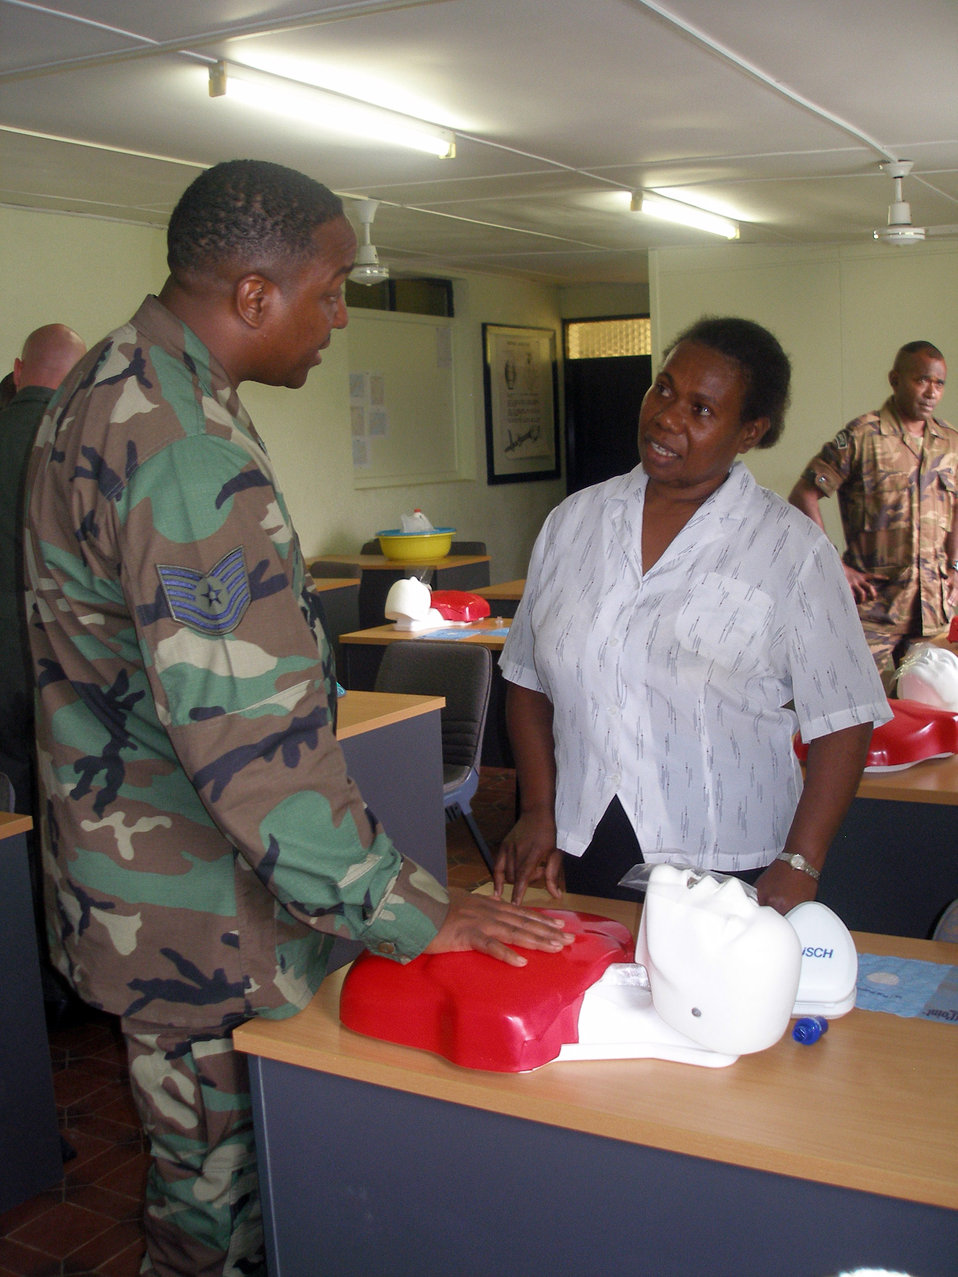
Humanitarian mission impacts team, residents

Tech. Sgt. William Parker gives basic life support instruction during a two-day train-the-trainer class July 25 on Vanuatu. Sergeant Parker is the NCO in charge of Clinical Medicine Flight, 15th Medical Group from Hickam Air Force Base, Hawaii. He was part of a team that taught basic life support and self-aid buddy care train-the-trainer courses to police, immigration and customs personnel, and paramedics on the island of Vanuatu. The team was part of the Oceania Humanitarian Assistance Mission that brought medical, dental and engineering personnel to perform civil assistance projects on Vanuatu, Nauru and Kiribati July 20 through 30.